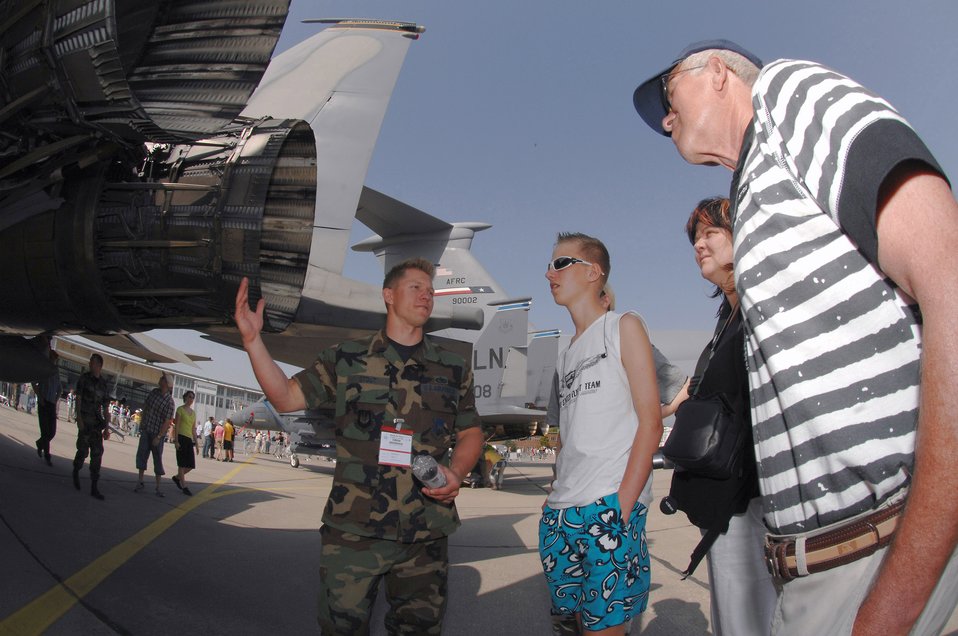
USAFE Airmen beat the heat, manage air show crowd

Staff Sgt. Jeffrey Stout gives a tour of an F-15C Strike Eagle in the U.S. corral during the 2008 Berlin Airshow. U.S. participation in the Berlin Airshow enhances the U.S.-German military-to-military relationship, supports security cooperation strategic direction efforts and fosters good relations and better understanding among nations. Sergeant Stout is a crew chief from the 493rd Aircraft Maintenance Unit at Royal Air Force Lakenheath, U.K.